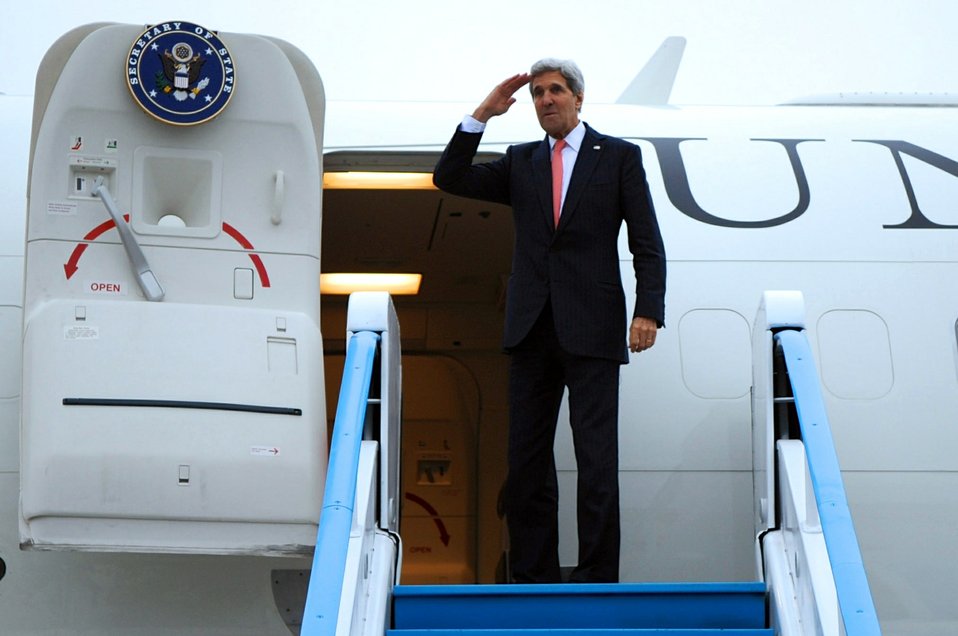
Secretary Kerry Bids Farewell to Polish Defense Minister Siemoniak

U.S. Secretary of State John Kerry snaps off a salute as he bids farewell to Polish Defense Minister Tomasz Siemoniak at the conclusion of a visit to the Lask Military Airbase in Poland on November 5, 2013.